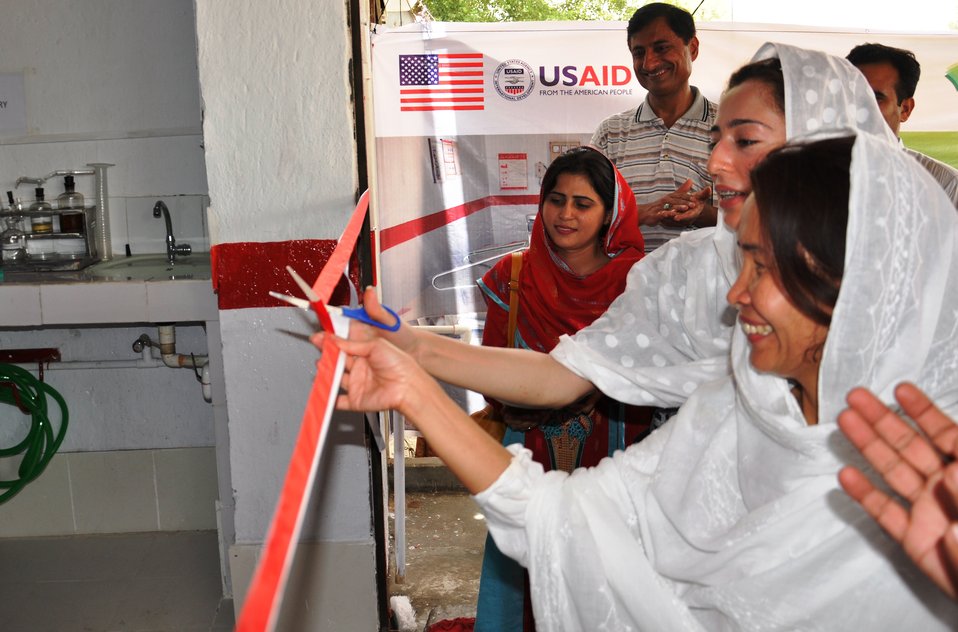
USAID, Engro to install Milk Chillers in Sindh, Punjab

Ms. Maryam Riaz, USAID and Ms. Agnes Luz, Chief of Party Entrepreneurs has inaugurated the Milk Chiller at Village Bagi near Moen Jo Daro, Sindh.